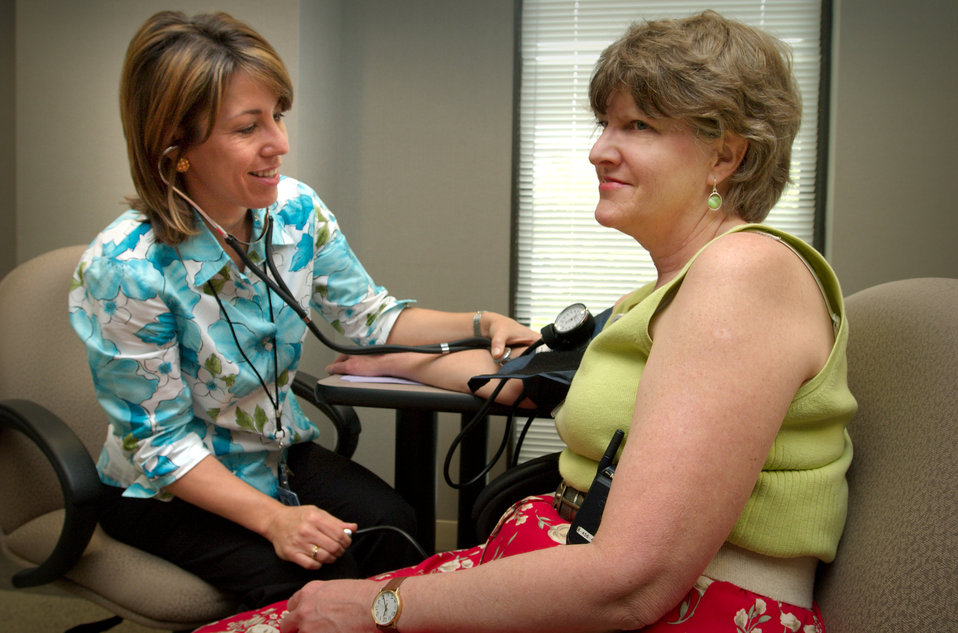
Here, CDC employee, Robyn Morgan (left), was shown having her blood pressure read by Robyn Morgan, of the National Center for Chronic Disease Prevention and Health Promotion (NCCDPHP), during a 2005 CDC blood pressure screening event. Campuses included were Century Center, Chamblee, Corporate Square, Executive Park, Koger, and Roybal, and was provided by the Office of Women's Health (OWH), Office of Health and Safety (OHS), NCCDPHP's Cardiovascular Health Branch (CVH), as well as volunteers from various other centers, institutes, and offices (CIOs). This annual event was held in observance of National High Blood Pressure Education Month, National Nurses Week, and National Women's Health Week.High blood pressure (HBP), or hypertension, is known as a 'silent killer' for people who have HBP often do not experience symptoms, but are at greater risk for heart disease and stroke, which are leading causes of death in both women and men.